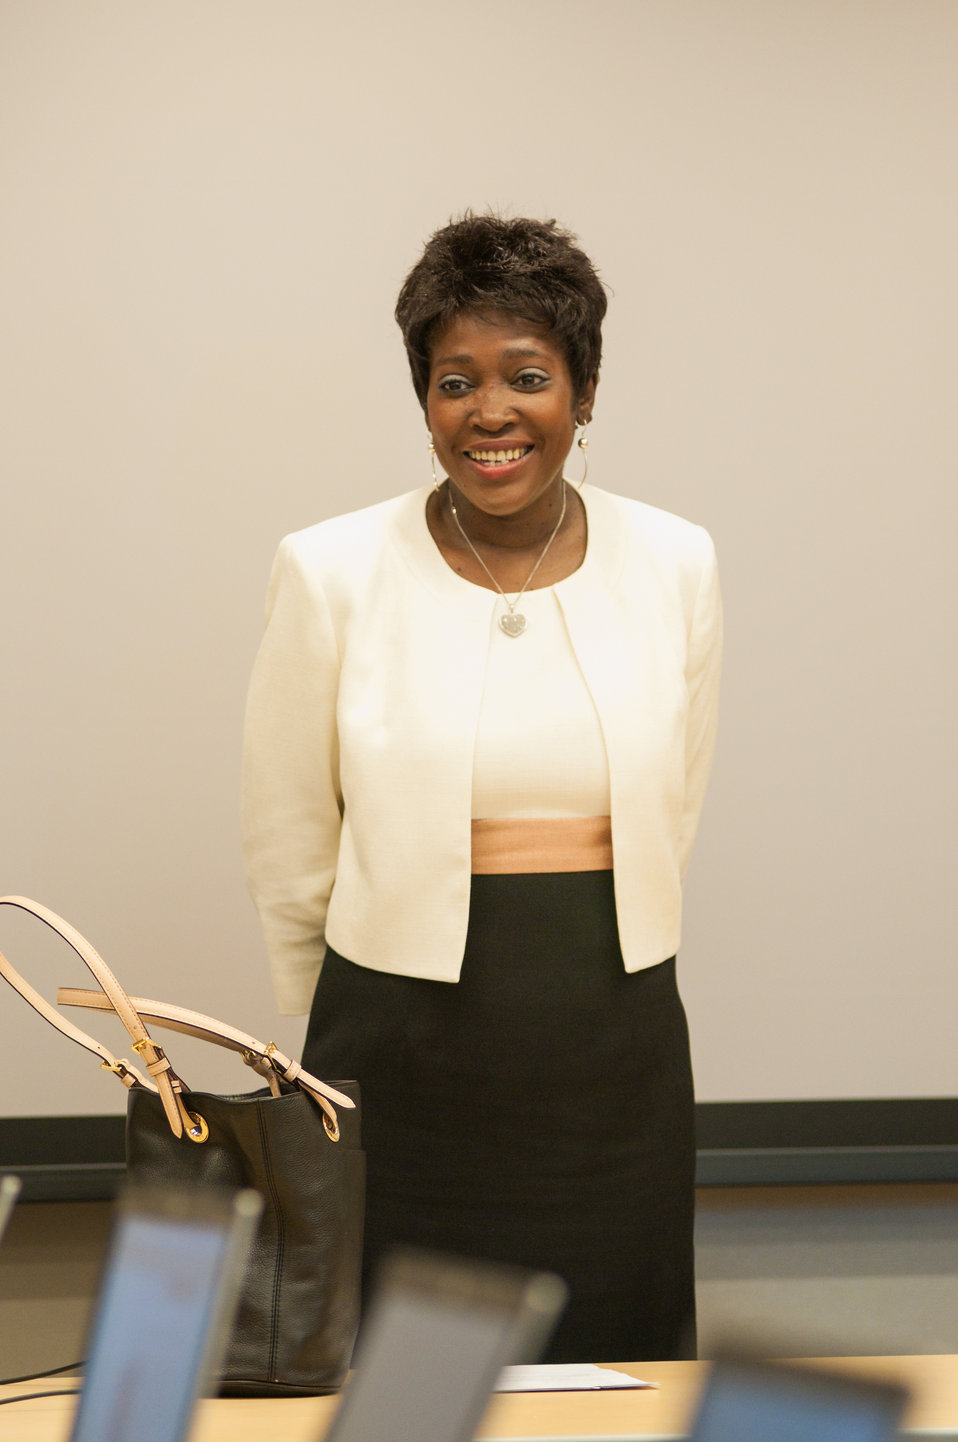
U.S. Department of Agriculture (USDA) Office of Advocacy and Outreach (OAO) Director Carolyn Parker discusses the OAO’s involvement with higher education institutions at the USDA 2013 Land-Grant Development Tribal Fellows Program held in Washington, D.C. on Monday, Jun.03, 2013.